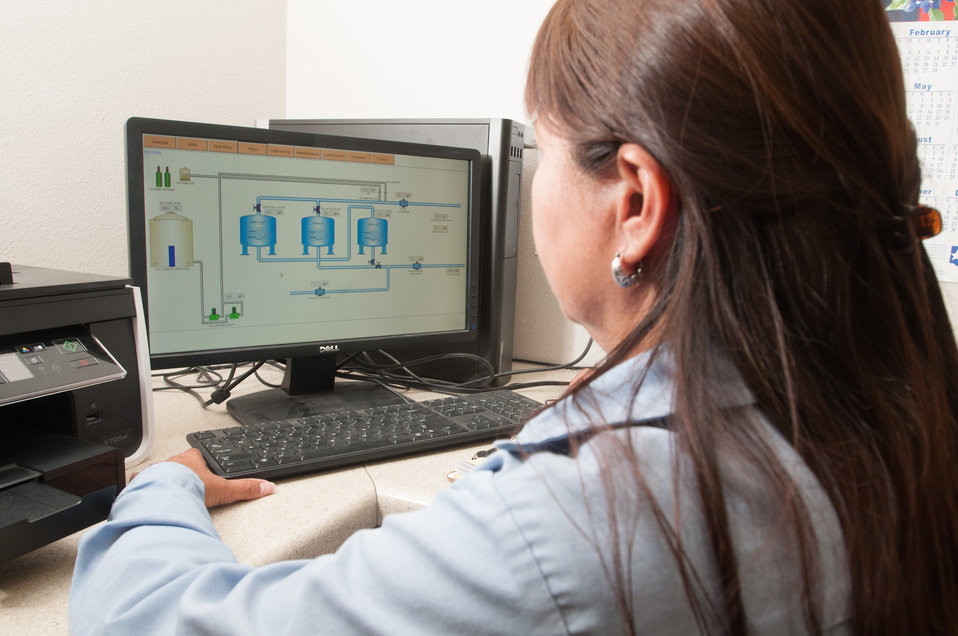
Freer Water Control and Improvement District (FWCID) Manager Diana Adame checks the status of the Arsenic Removal System Absorber vessels by using a graphical computer interface in the operations office, on Tuesday June 18, 2013, in Freer Texas.

Although, the naturally occurring arsenic levels have remained constant for more than a century, the Environmental Protection Agency (EPA) safe level standards have established lower levels of arsenic to be safe for human consumption. To meet those levels FWCID approached USDA and was awarded a $986,000 loan for Phase I, to install two new water wells, each rated at 167 gallons per minute (creating a total of eight wells); 13,600 feet of well collection lines; and 15,000 linear feet of well control line to remotely control the well pumps and the 1,000,000 gallon holding tank at the well facility, which supplies water to the new Arsenic Removal System (Phase II). Previously, water was manually controlled by personnel who knew when and how long to manually opened and closed water valves or started well pumps to ensure holding tank levels were within operating levels during peek and slack times of the day. Phase II was a combination of a $1,832,000 loan and a $1,258,750 grant, which provided for the customized arsenic removal system, seen in these photos. The system includes a new 3,530 sp. ft. facility, on a .76-acre site, and houses the operations room, computer and power system, laboratory room, and pump systems. The entire operation can be monitored through a desktop computer interface system. The computer-controlled system ensures raw water is fed to the arsenic removal pump system, which works in sequence to maintain a constant pressure, when needed, to pump water through (blue) arsenic removal absorber vessels, and into ground storage tanks that feeds the residential and commercial needs of the city. Samples of water are periodically tested; and so far the arsenic levels have been below 1 part per billion (PPB), well under the 10 PPB limit.